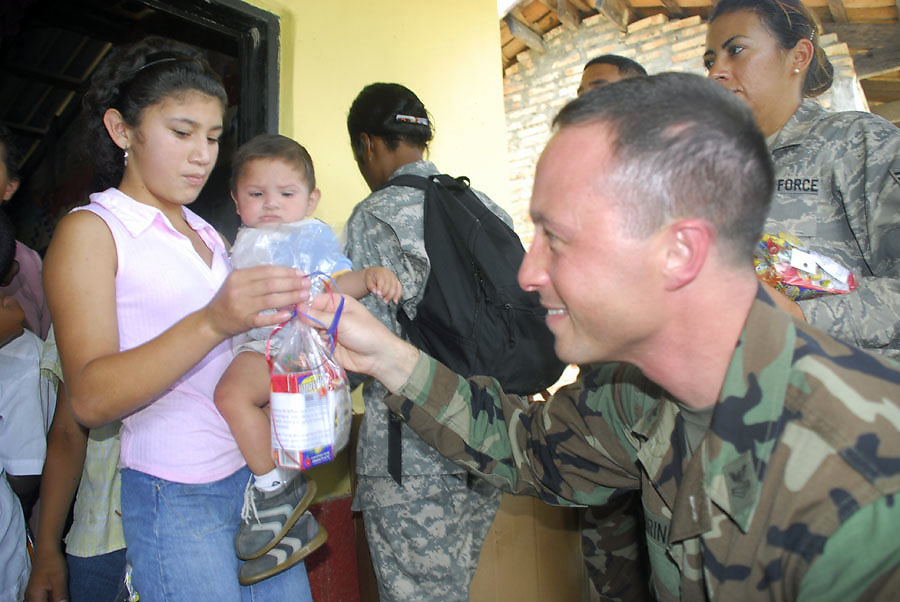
JTF Bravo participates in Honduras Children's Day

Navy Petty Officer 1st Class Norm Oehring gives out candy during Children's Day Sept. 10 in Siguatepeque, Honduras. More than 400 children in two towns spent time with servicemembers from Joint Task Force-Bravo. Petty Officer Oehring is a JTF-Bravo chaplain's assistant.